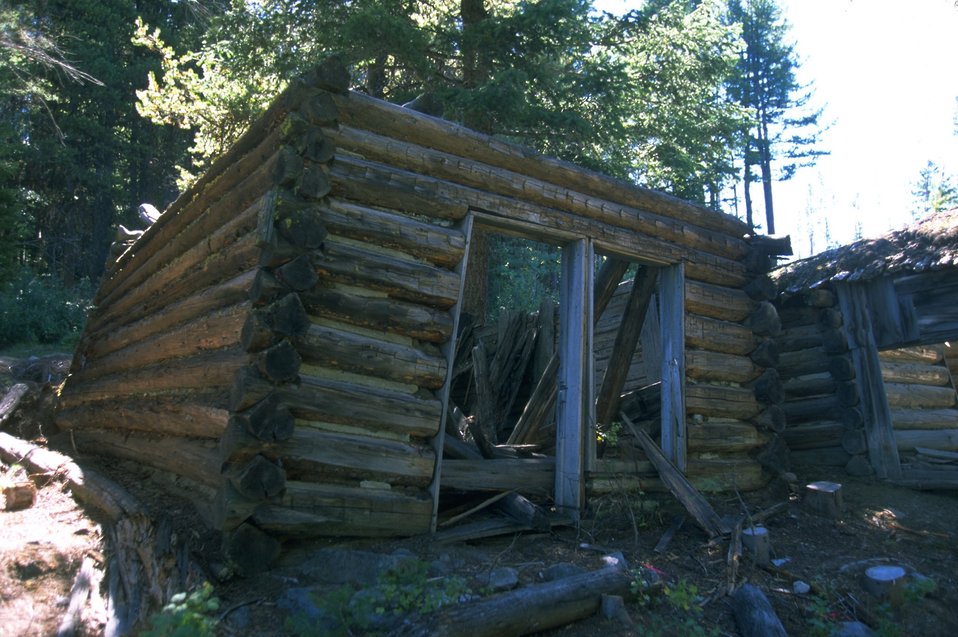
Coloma Ghost Town ruins